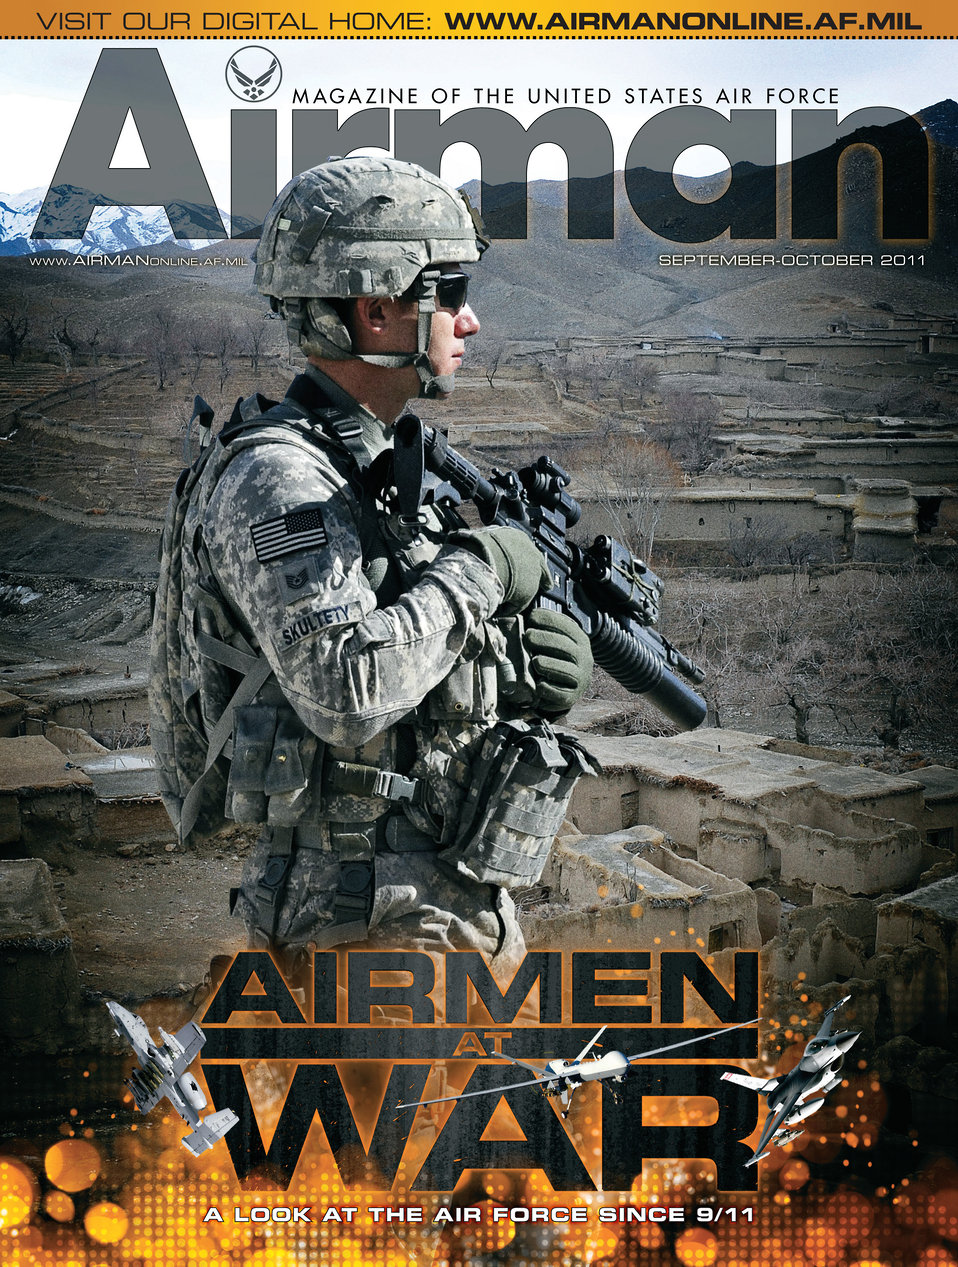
Airman magazine moves to new digital home

The cover page of the last print issue of Airman magazine.